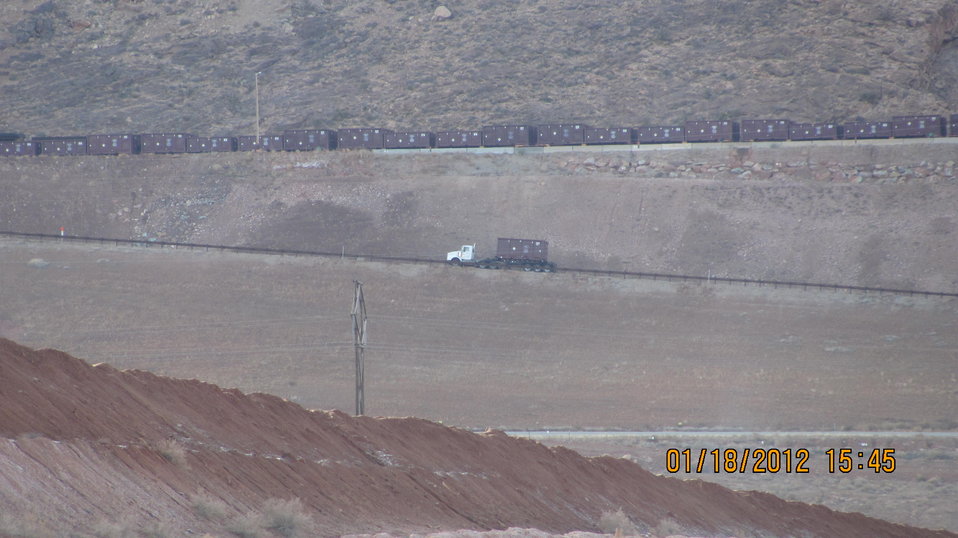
Moab transport

The last truck of the day carries a container full of uranium mill tailings to the rail bench up the hillside from the tailings pile at the Moab, Utah, site.